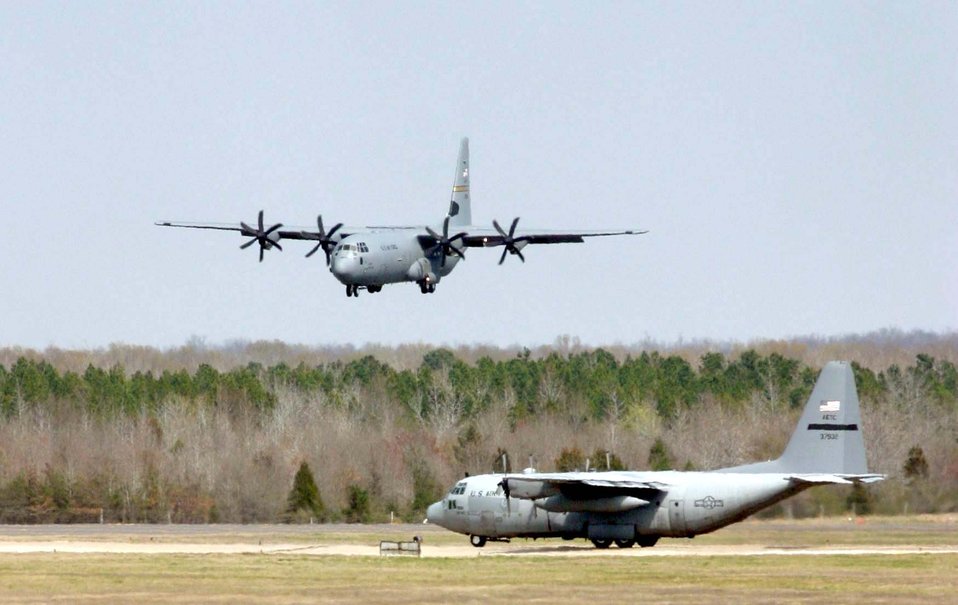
C-130J on the way

LITTLE ROCK AIR FORCE BASE, Ark. -- The Air Force's newest C-130J Hercules comes in for a landing here March 19 while an older C-130 model waits on the runway. This is the first J model assigned to an active-duty unit.